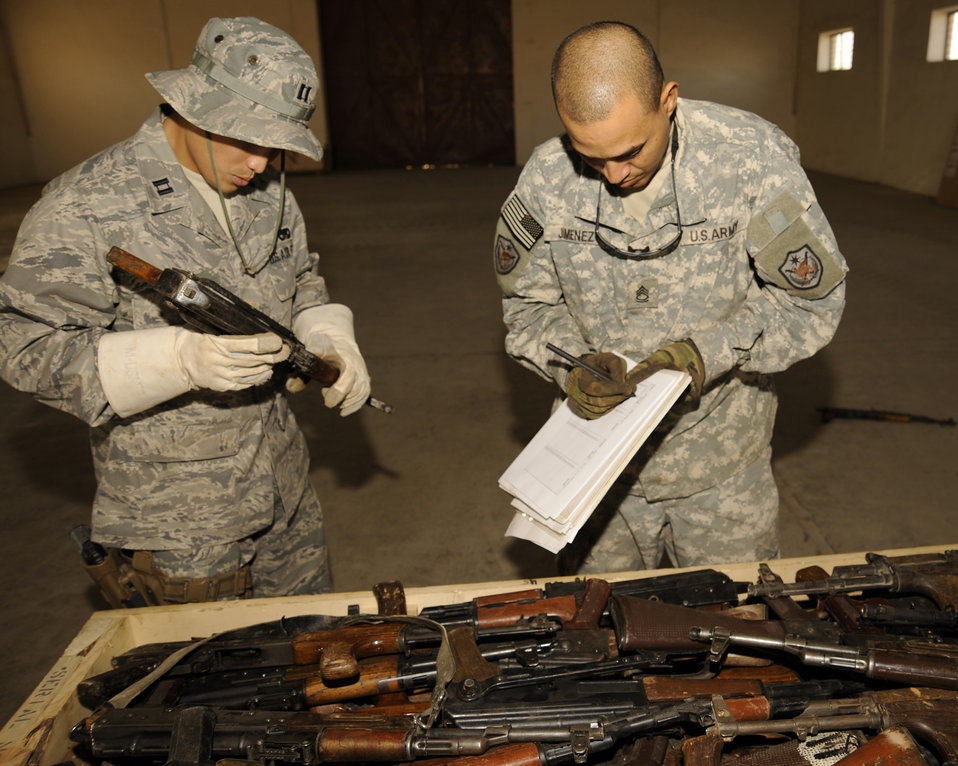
Airman leads team in managing enemy's weapons cache

Capt. Ted Yang calls out the serial number of an AK-47 rifle to Army Sgt. 1st Class Alejandro Jimenez as he records the number at Taji Military Base, Iraq. All captured enemy weapons are accounted for before they are packaged up and shipped to be destroyed. Captain Yang is the J4 Taji liaison officer. He is a native of Fresno, Calif., and deployed from Whiteman Air Force Base, Mo. Sergeant Jimenez is the Multinational Security Transition Command-Iraq J4 collective weapons point NCO in charge.